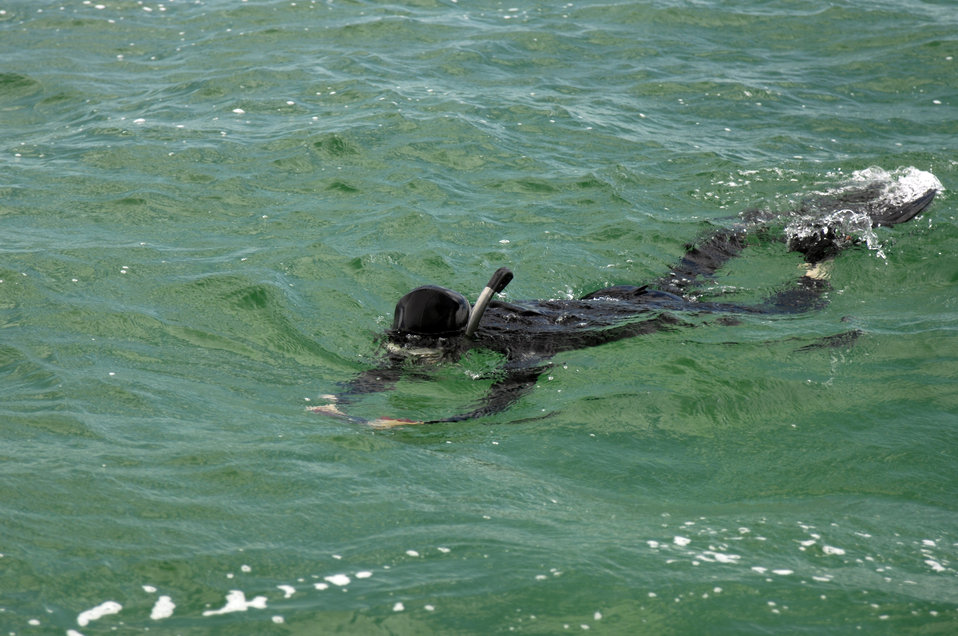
Skin diving is a popular sport in Biscayne Bay National Park, in southern Florida on April 5, 2010.